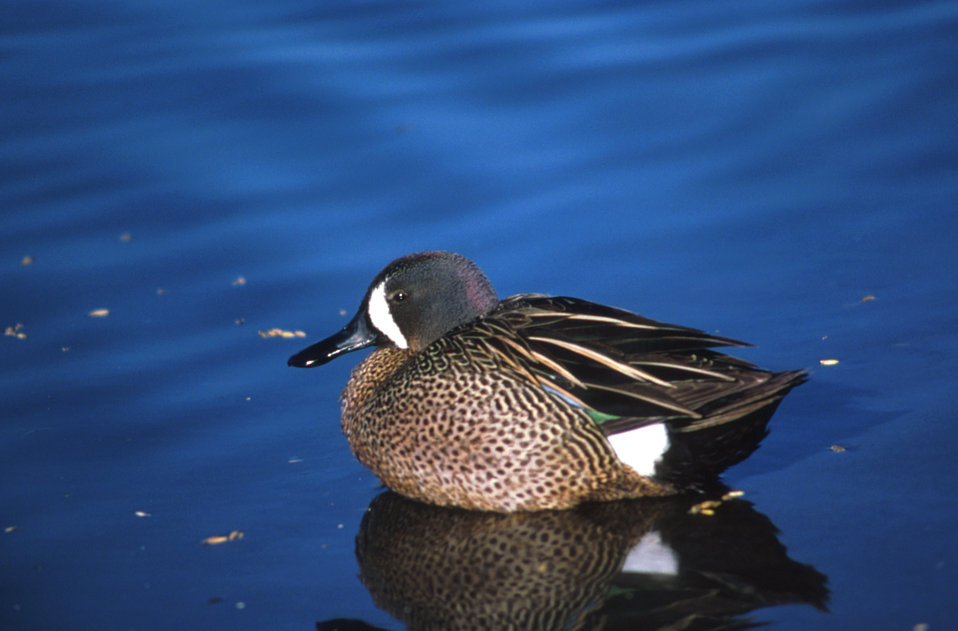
Blue-winged teal - drake

duck; ducks;Desoto National Wildlife Refuge; Iowa; NWR;Waterfowl;